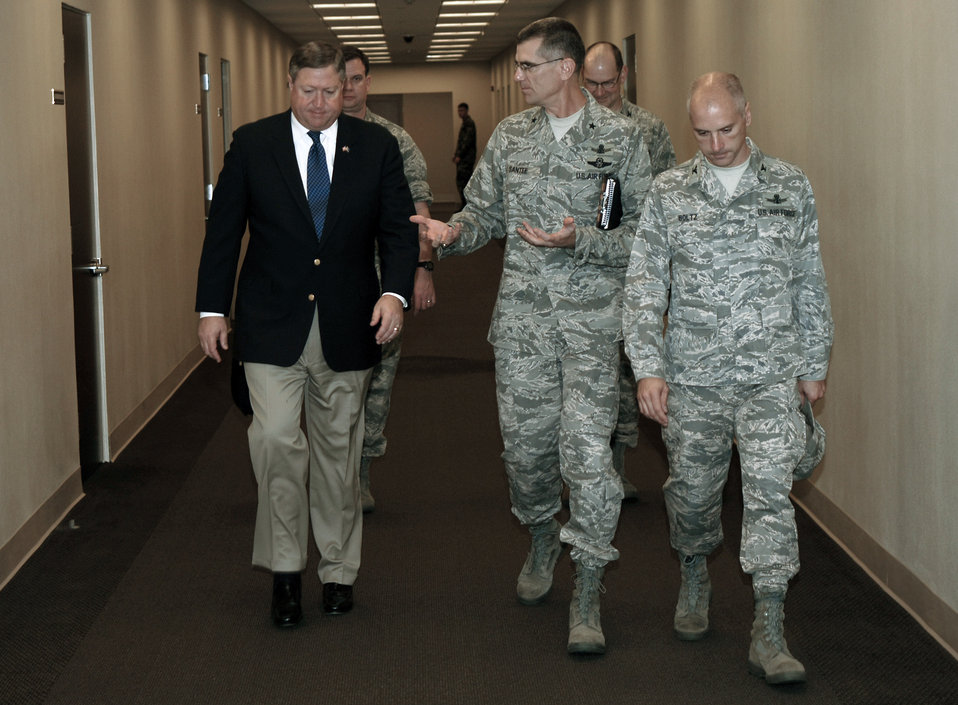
Secretary of the Air Force visits Vandenberg Air Force Base

Secretary of the Air Force Michael B. Donley toured the Joint Space Operations Center Nov. 22 with Brig. Gen. Jay Santee (center), 14th Air Force vice commander, and Col. Richard Bolz (right), 614th Air and Space Operations Center commander, during his visit to Vandenberg Air Force Base, Calif. Secretary Donley visited the base to discuss future plans on how the JSpOC and 14th Air Force teams can continue to help combat Airmen in missions abroad.